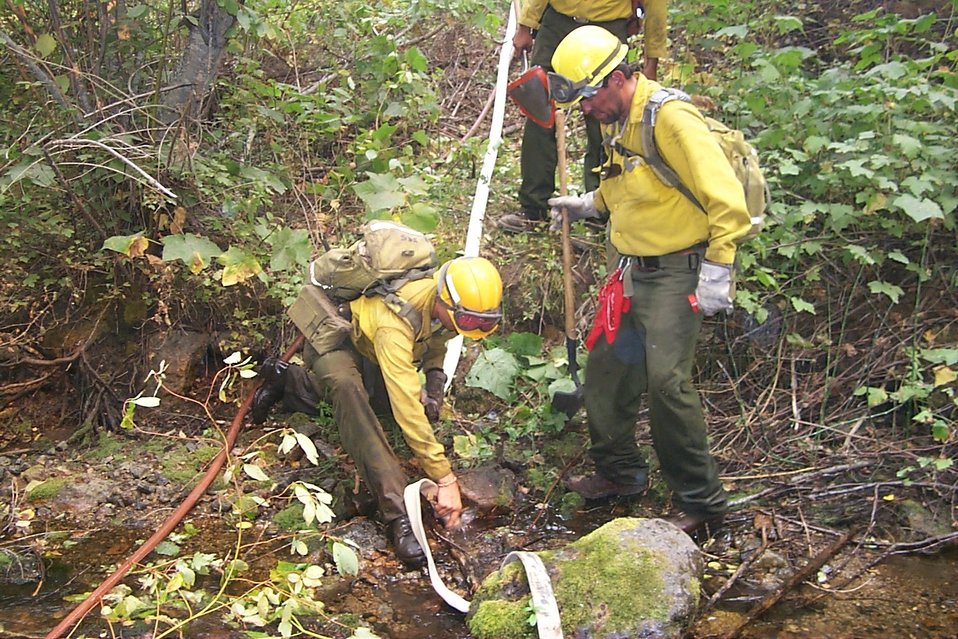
Line crew Fire Clearwater Fire Salmon Field Office USRD Upper Snake River District